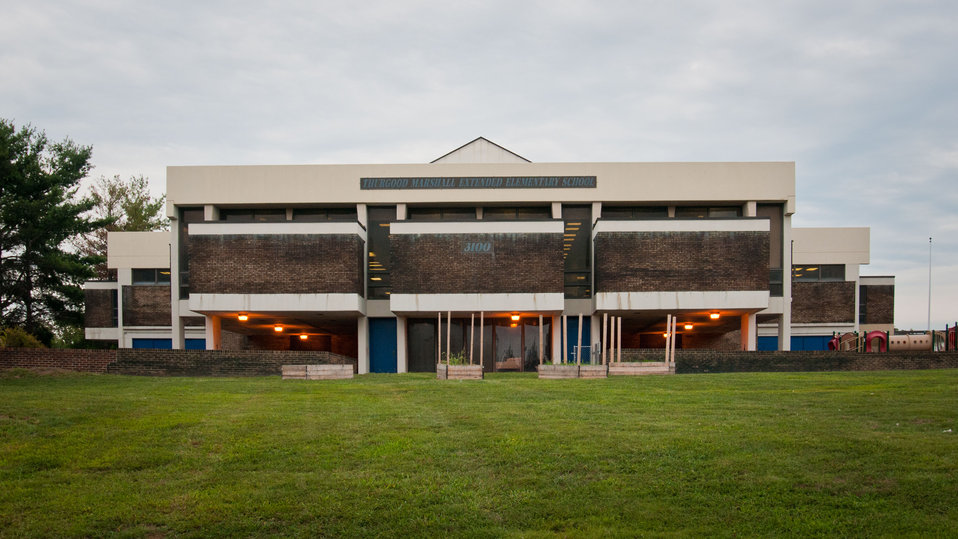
School front and existing raised garden beds, before U.S. Department of Agriculture (USDA) People’s Garden Executive Master Gardeners, friends, and family, along with Washington Capitals fans arrive to volunteer in the District of Columbia Public Schools’ (DCPS) Beautification Day, on Saturday, August 25, 2012, at Thurgood Marshall Elementary School, in Washington, D.C. Each year people are invited to help “spruce up” public school facilities in preparation for the first day of school. More than 70 volunteers pitched in at this large school facility. The People’s Garden effort involves building and painting raised planter boxes, then preparing the soil mixture so they are “ready to grow.” Additionally, a team that includes descendants of U.S. Supreme Court Justice Thurgood Marshall assembles a prefabricated garden toolshed. The Justice’s son, John Marshall leads the team, which includes Brianna the Justice’s great-grand daughter in one of many multi-generational efforts at this school today. Washington Capitals Forward Mike Riberio, his family and mascot Slapshot participated in every project underway at Marshall School. From the outside gardens, to inside murals, and robotics worktable construction, the teams made their goals.